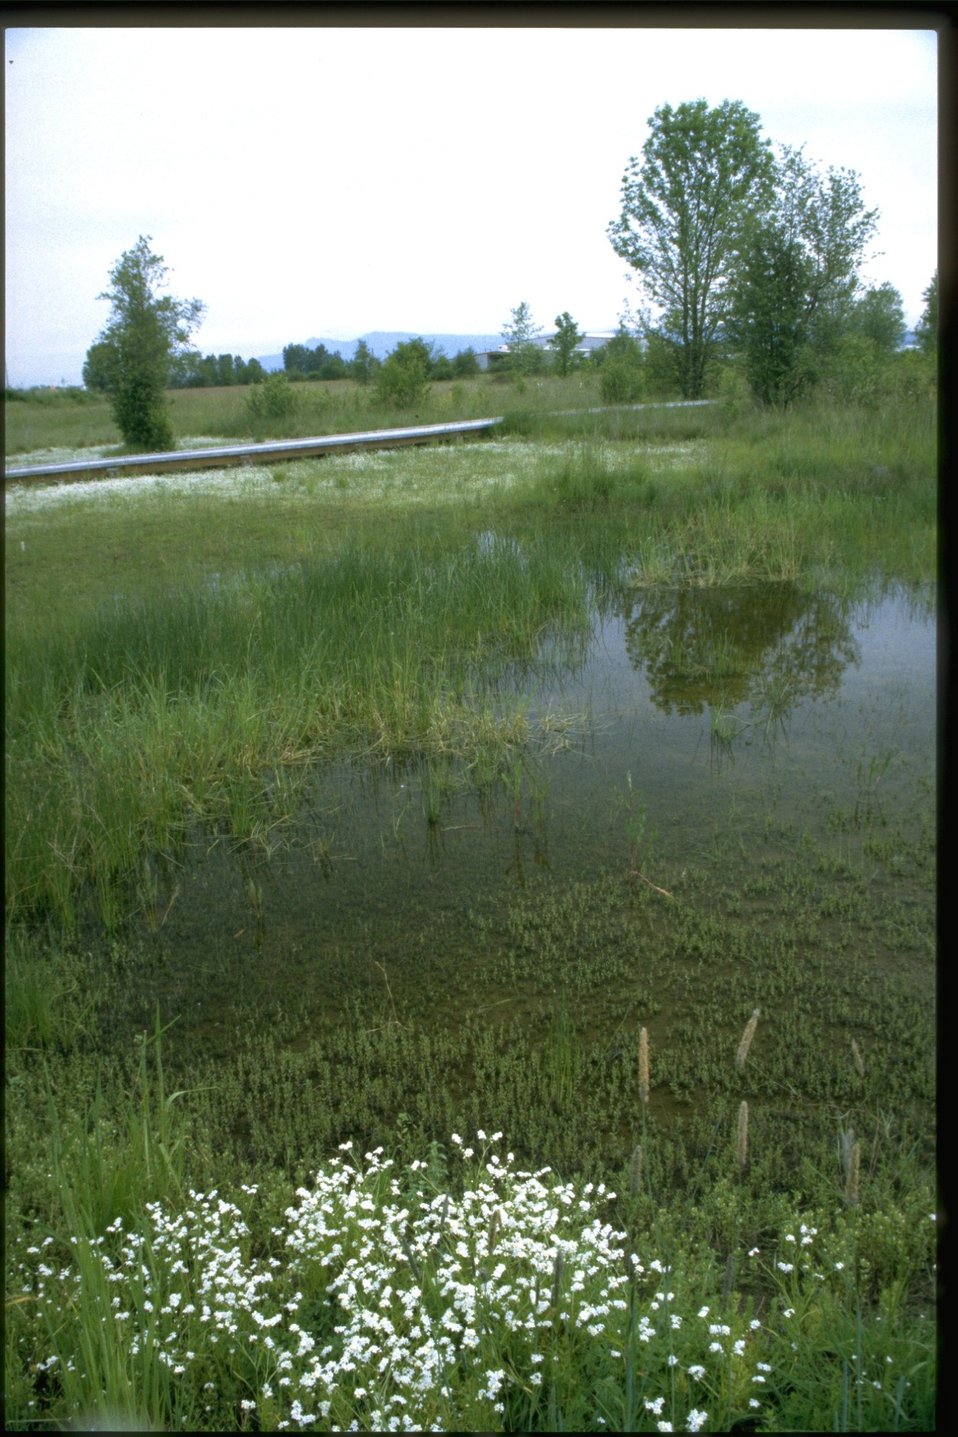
Far shot of Plagiobothrys figurantus.